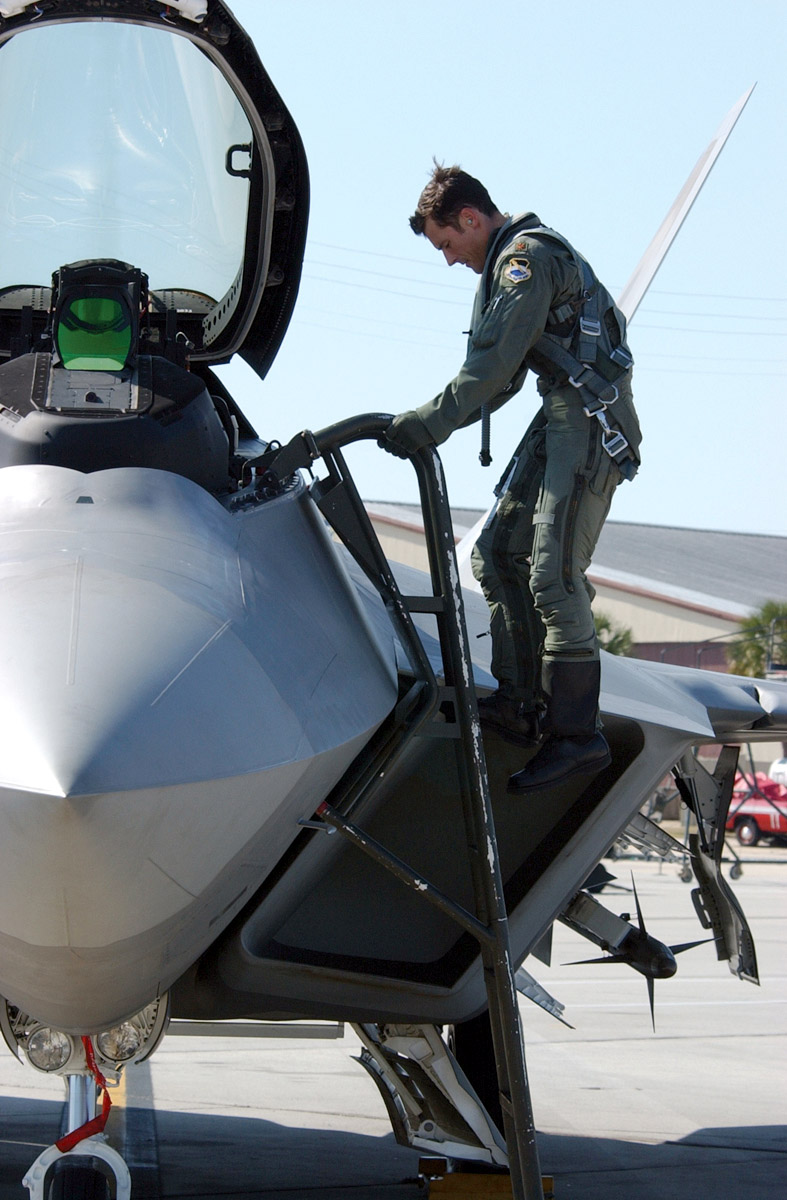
War Day

TYNDALL AIR FORCE BASE, Fla. (AFPN) -- Maj. Paul Moga returns from a flight at the completion of the